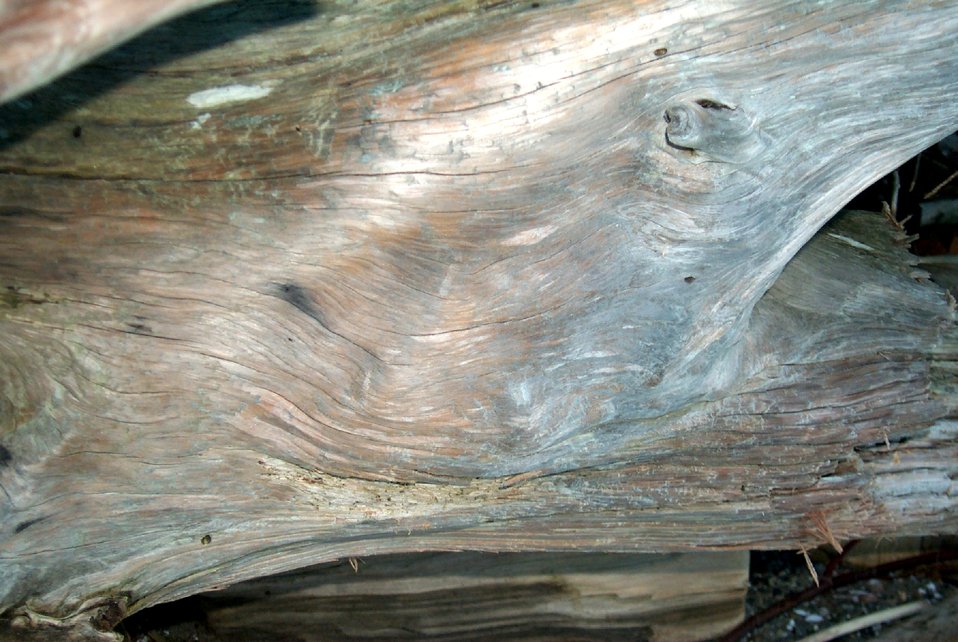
Driftwood at Gig Harbor.